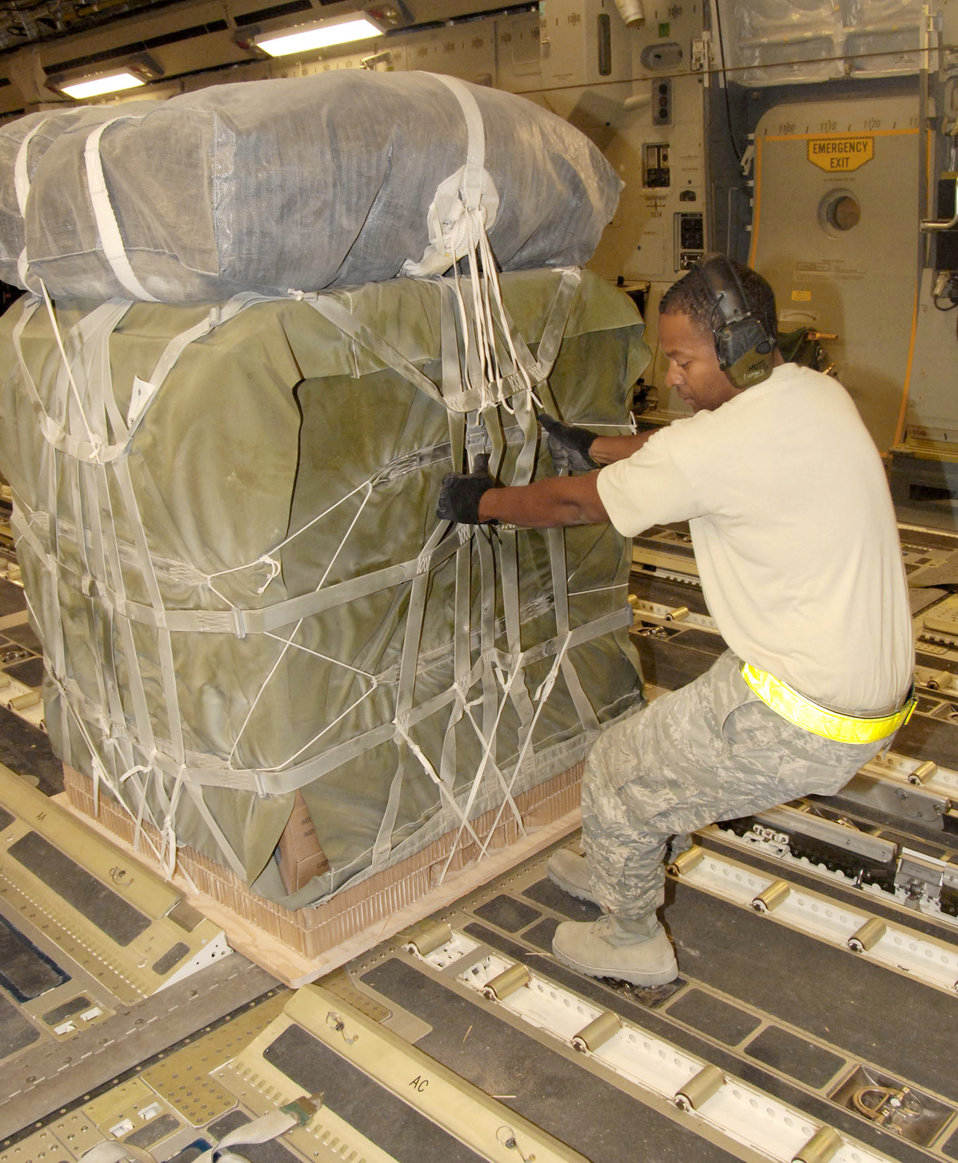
Deployed Soldiers, Airmen work together to keep troops downrange supplied

Tech. Sgt. Ronald Johnson pulls a fully rigged pallet onto a C-17 Globemaster III in Southwest Asia. Sergeant Johnson is one of many Airmen working with U.S. Army riggers to resupply isolated forward operating bases in the area of responsibility. Sergeant Johnson is assigned to the 8th Expeditionary Air Mobility Squadron.